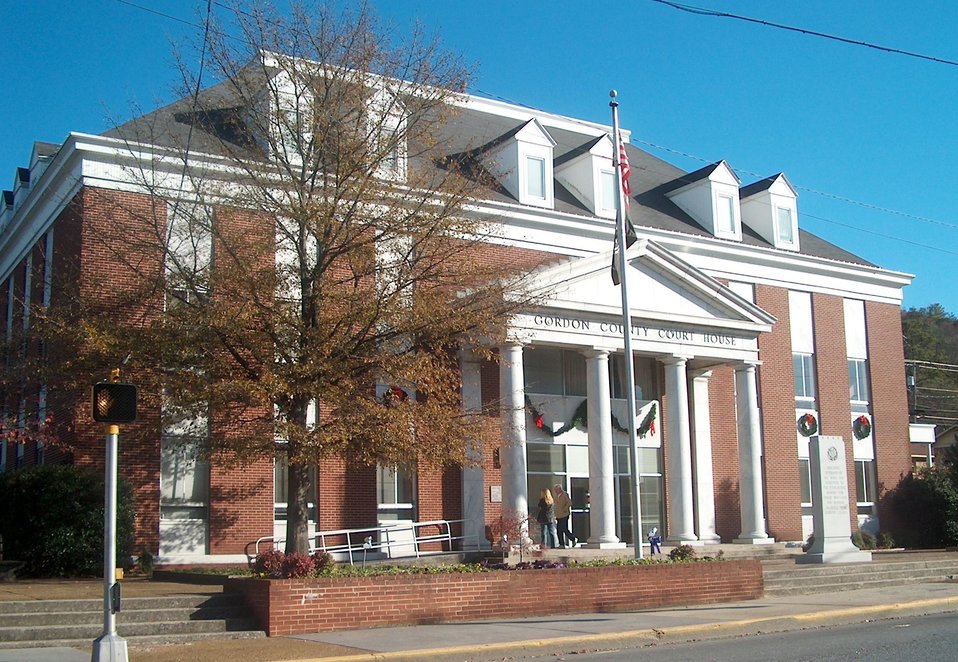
Courthouse in Calhoun, Georgia